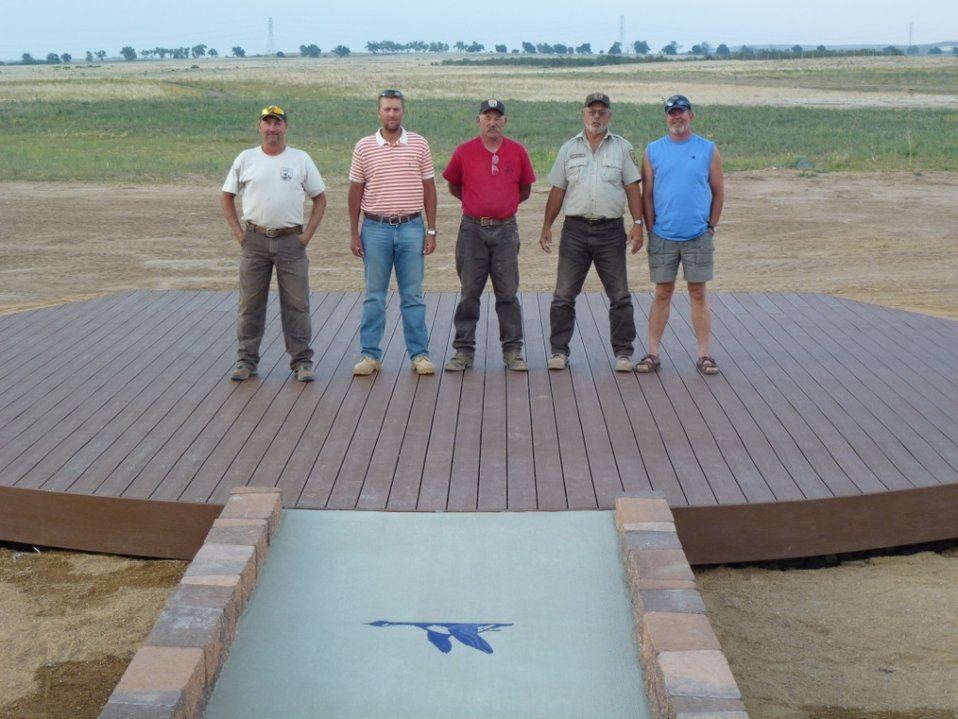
Refuge Maintenance Action Team

Thanks to the work of a Mountain-Prairie Region Refuge Maintenance Action Team (MAT), a new amphitheater was recently erected adjacent to the Rocky Mountain Arsenal National Wildlife Refuge’s visitor center in Commerce City, Colo.

The amphitheater is a fully accessible facility with seating for 175 to 200 spectators. It features a stage and fire pit for special programs. The addition of the amphitheater to the visitor center will enhance interpretive program delivery as part of the facility’s regular visitor services and will be used for special events. Commerce City has also expressed an interest in using the amphitheater for programs of its own.

The project was completed under budget and cost nearly half as much as the bids received from private contractors. According to rough estimates, the U.S. Fish & Wildlife Service saved approximately $70,000. The substantial cost savings was realized by employing the MAT, which is comprised of in-house maintenance workers with various skill sets from several stations across the region. Typically, deferred maintenance dollars pay for the project materials, labor, travel, room and board of MAT members. MAT projects usually take between one to five weeks to complete.

Construction began May 7, 2012 and concluded June 13, 2012 with a one-week pause in the middle of the project to allow MAT members a break. In total, the project took 34 12-hour-work days. The MAT worked more than 2,000 man hours on the project with no time lost due to injury or any safety-related issues.

The Refuge MAT consisted of:
• Rich Iwanski – Bear River Migratory Bird Refuge – Engineering Equipment Operator – Pre-construction organization, MAT team foreman, Equipment Operator and other general work.
• Cameron Fenrich – Mountain-Prairie Regional Office – Civil Engineer – Project Manager, Project Engineer, amphitheater design, on-site inspections, general construction work and overall construction and MAT team organization.
• Steve Raney – Baca National Wildlife Refuge – Maintenance Worker - Equipment Operator and other general work.
• Justin Wanzek – Valley City Wetland Management District – Maintenance Worker- Equipment Operator and other general work.
• Delbert “Skip” Palmer – Lee Metcalf National Wildlife Refuge – Maintenance Worker - Concrete Specialist and other general work.
• Tom Ronning – Rocky Mountain Arsenal National Wildlife Refuge – Range Conservationist - Truck Driver and other general work.